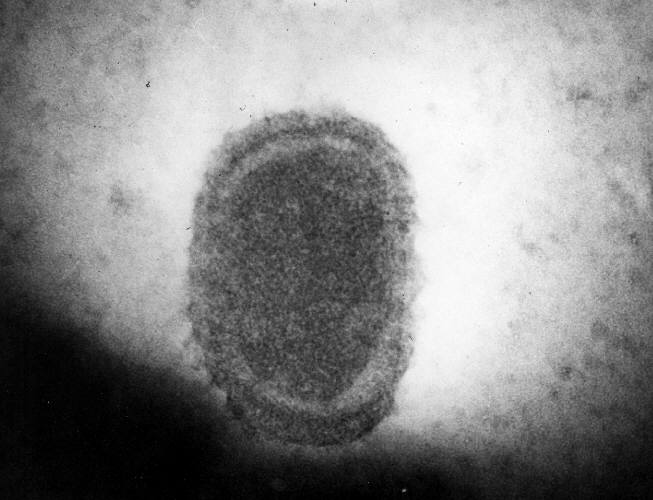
This transmission electron micrograph (TEM) revealed some of the ultrastructural morphology exhibited by a poxvirus, molluscum contagiosum, virion.